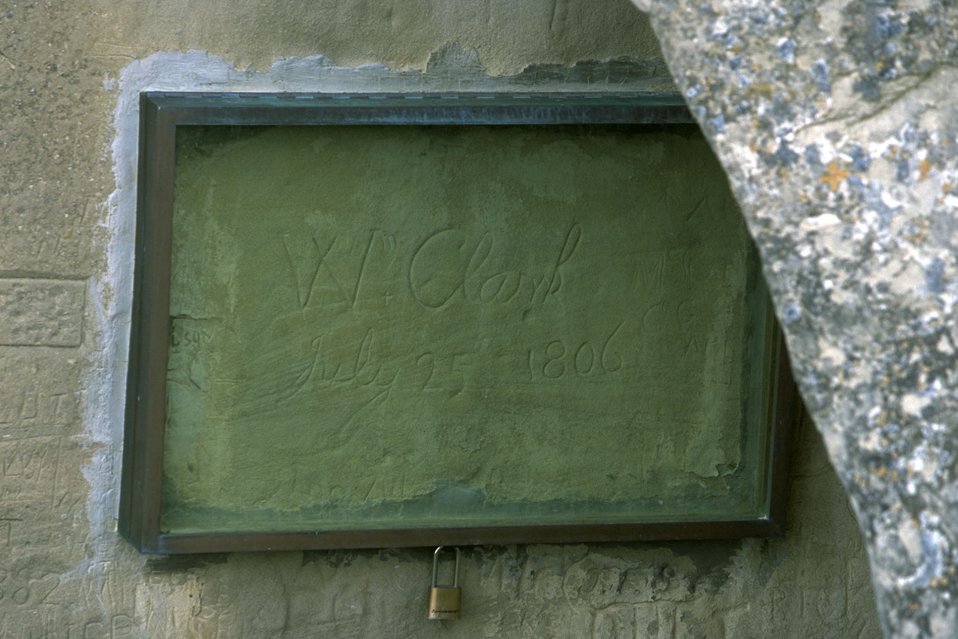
Closeup view of William Clark's signature on Pompeys Pillar National Monument